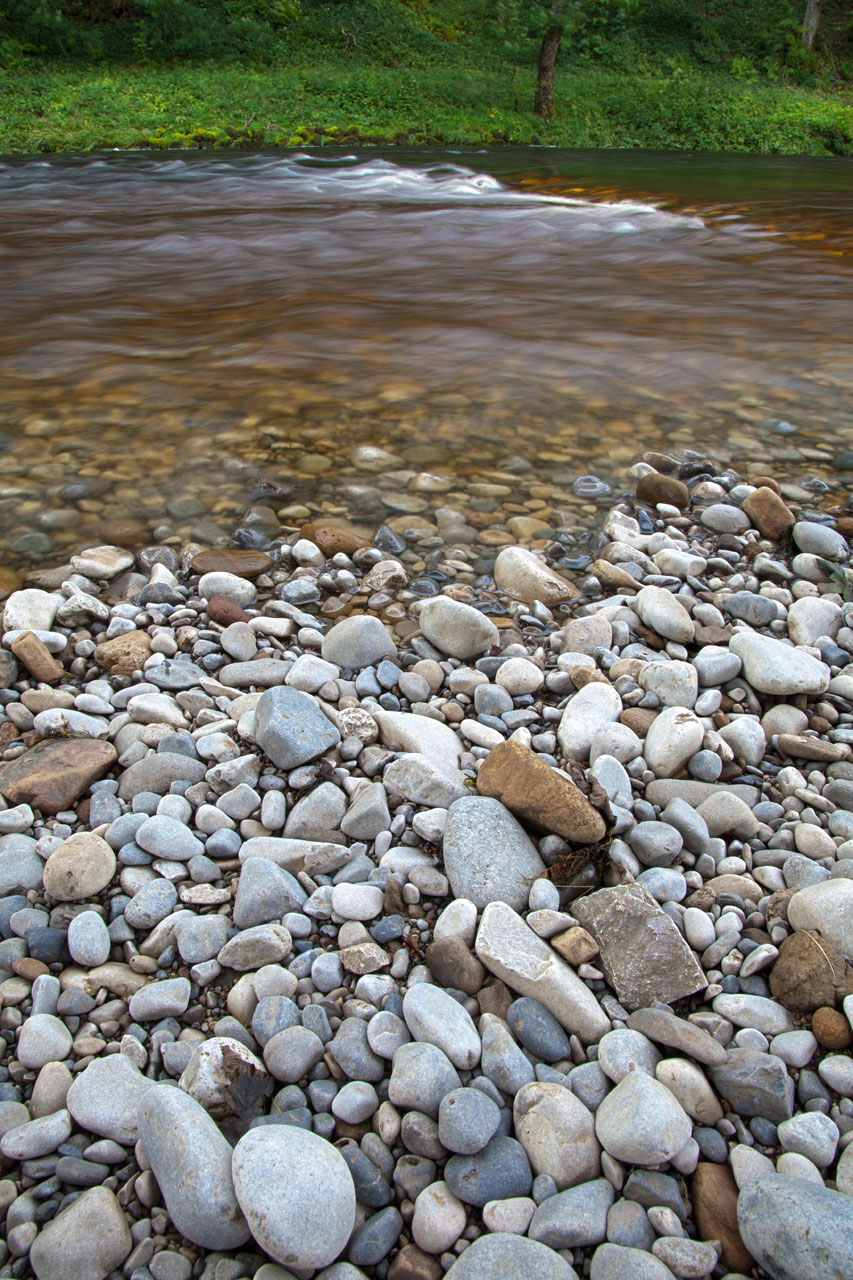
Pebbles and river

Pebbles in foreground with floating river and forest in the background.